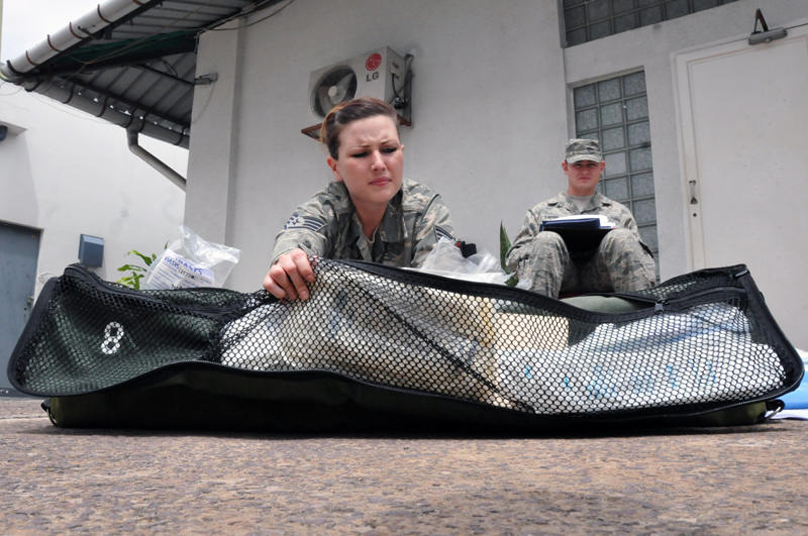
MEDLITE 11 benefits from experiences of Air National Guard members

Staff Sgt. Amber Weaver (foreground) conducts an inventory on inflight medical kits while Tech. Sgt. Matt Larson reads an inventory checklist April 26, 2011 at the U.S. Embassay in Kinsasha, Democratic Republic of the Congo. MEDLITE 11 is a joint-medical exercise focused on aeromedical evacuation to improve the readiness of Air Force and DRC members. Sergeant Weaver is an aeromedical evacuation technician with the Wyoming Air National Guard 187th Aeromedical Evacuation Squadron, and Sergeant Larson is a medical material craftsman with the Minnesota ANG's 109th AES.